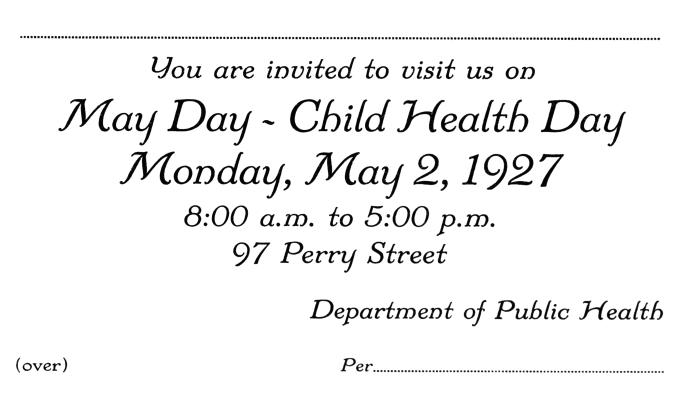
This historic image depicted an invitation to a celebration held in observance of 'Child Health Day' in the state of Michigan. The original image was scanned from a glass lantern slide donated by the Minnesota Department of Health, and is one of a historical collection of documents and photographs devoted to observances of Child Health Day in the United States.